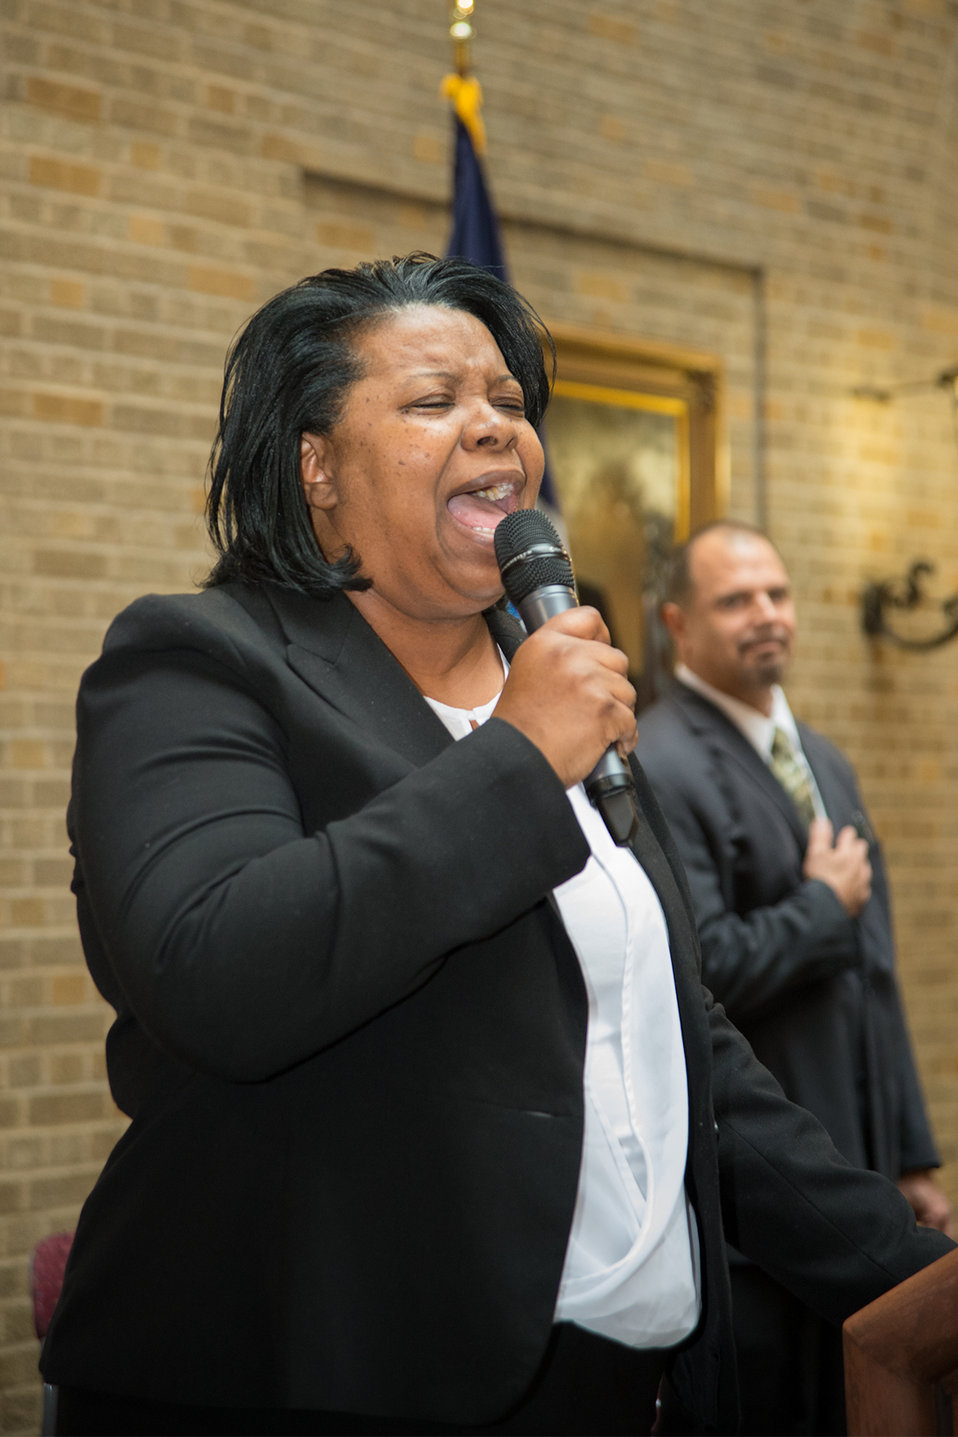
U.S. Department of Agriculture (USDA) Farm Services Agency (FSA) Sharon Miller sings the National Anthem at USDA’s Unsung Hero Awards at USDA in Washington, D.C. on Wednesday, May 7, 2014. USDA’s Organization of Professional Employees (OPEDA) in cooperation with USDA Departmental Management (DM) presented the “Unsung Hero Awards” to USDA employees who have demonstrated extraordinary effort in performing tasks, who have unselfishly shared time and expertise, and consistently and willingly extended a helping hand. They were also recognized for their contributions to transforming the culture of USDA.